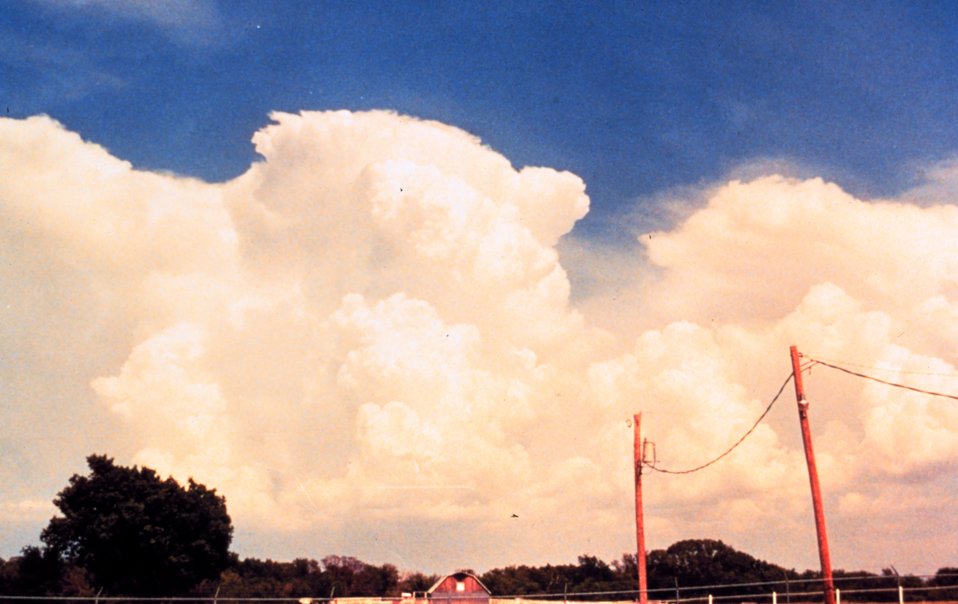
Building line of cumulonimbus thunderstorms. View is from behind storms during early stages of development.